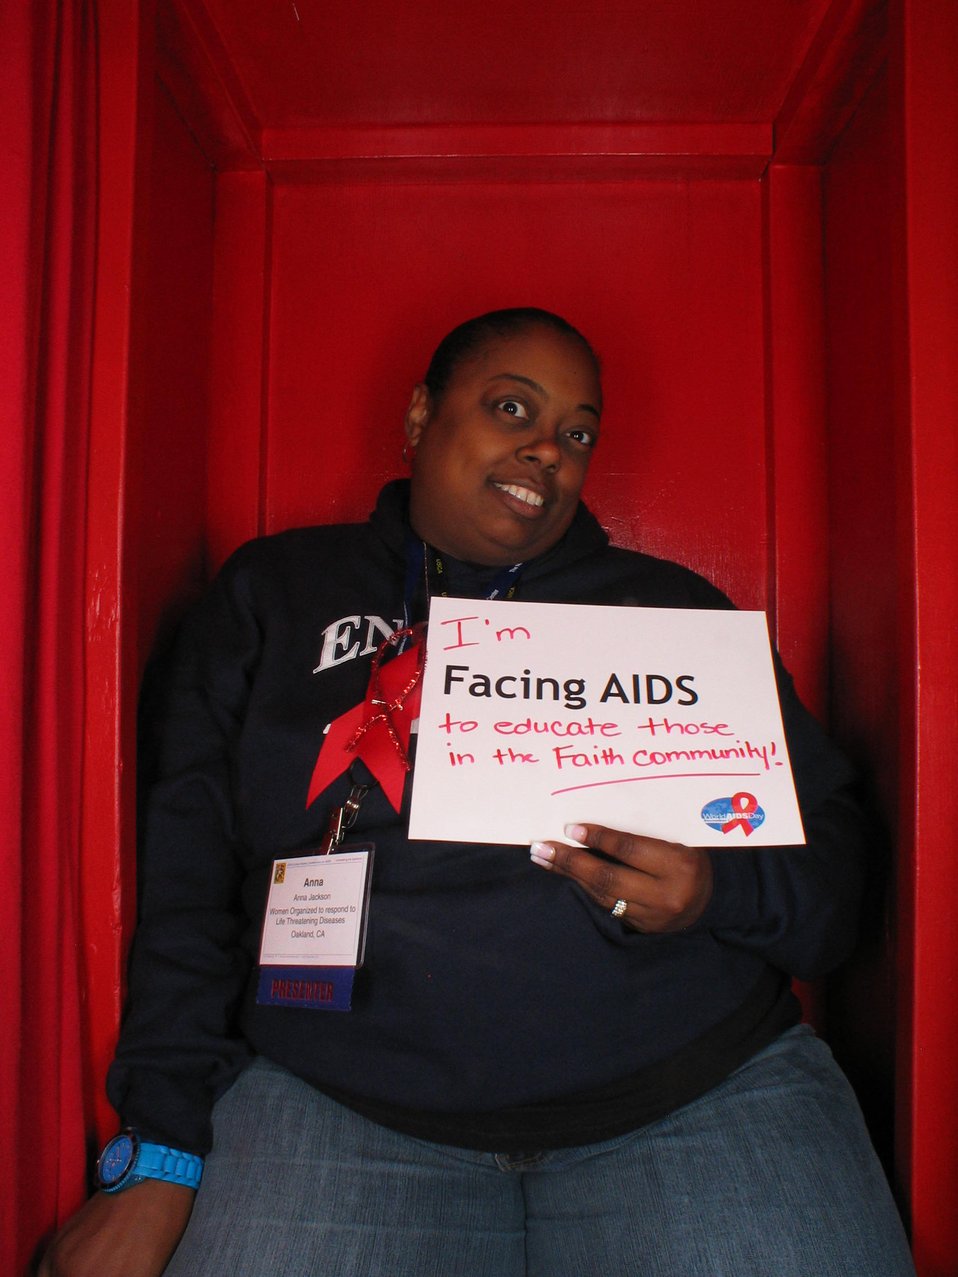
I'm Facing AIDS to educate those in the faith community.